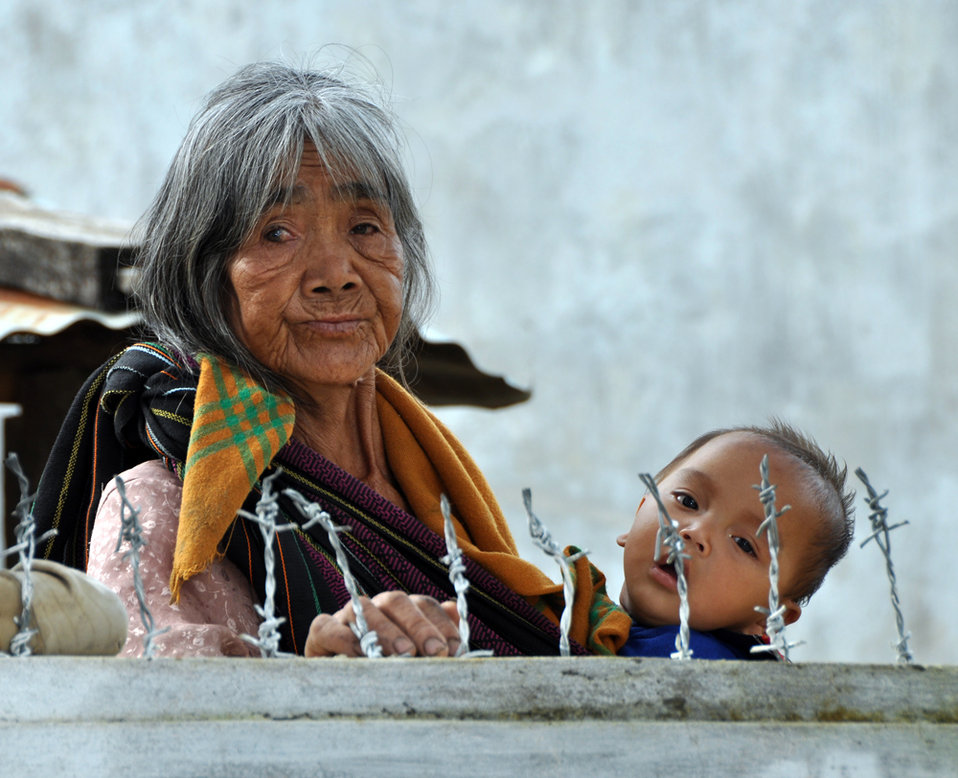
USAID supports ethnic minority communities in rural Vietnam